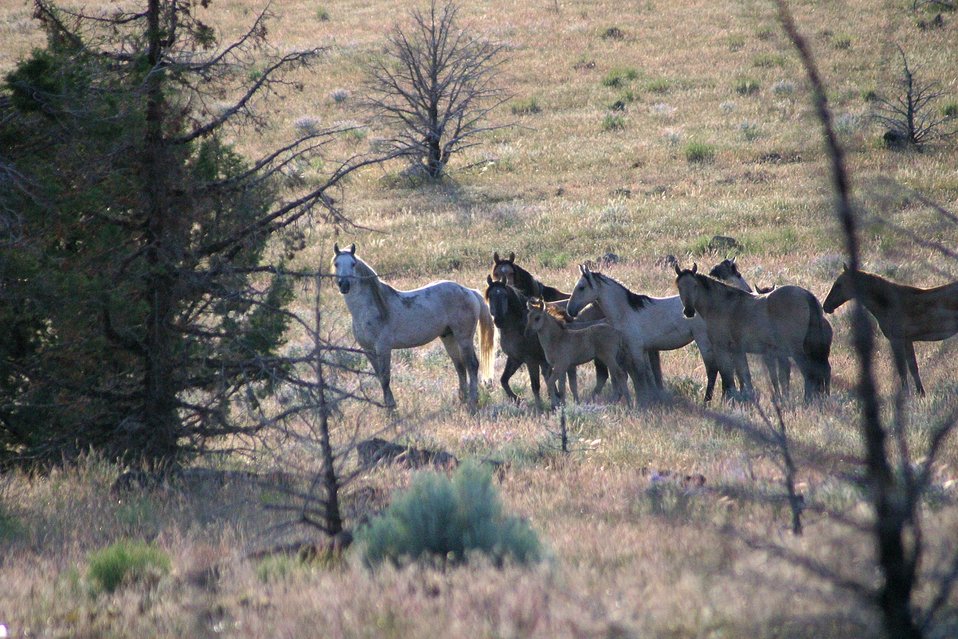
Wild Horse(s) in the Kiger Wild Horse Herd Management Area.